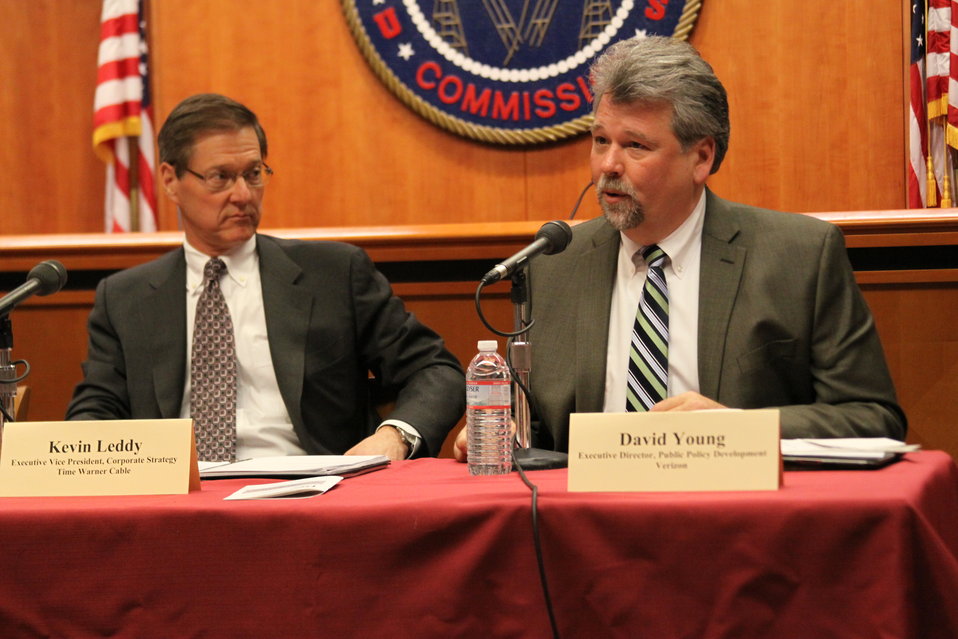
March 27, 2013 Gigabit City Challenge: Broadband Networks Workshop Panel 3: Innovation in Demand Aggregation